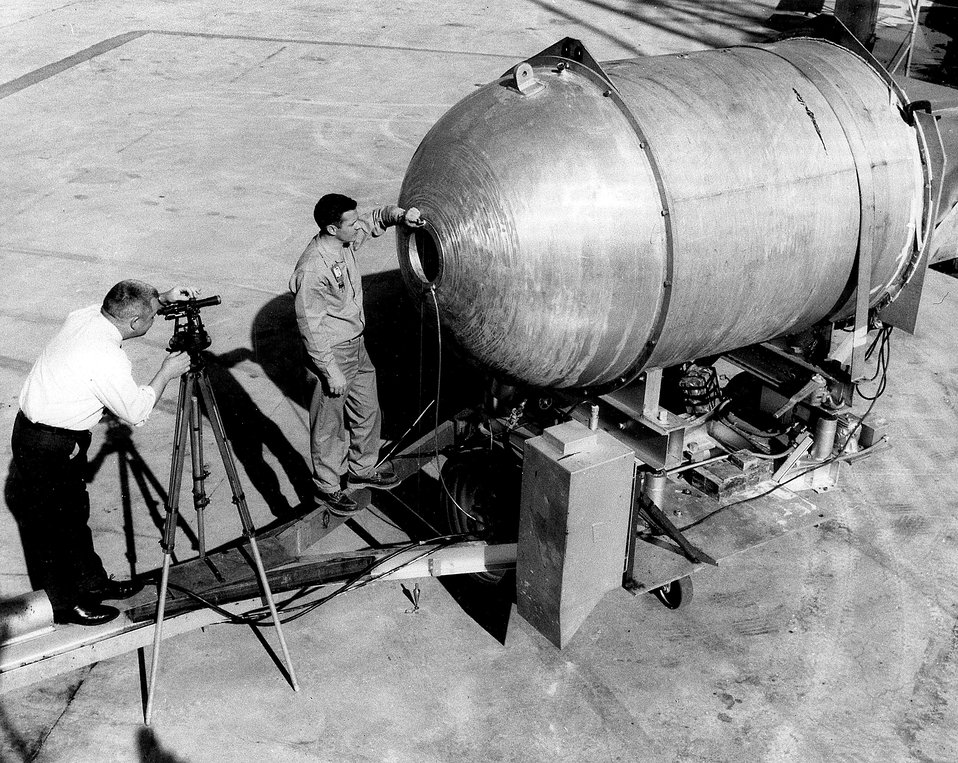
In a Tower Shielding Facility experiment designed to evaluate various sets of total neutron cross sections for oxygen and nitrogen, measurements were made of the energy spectra of fission neutrons transmitted through thick liquid samples of the elements. c. 1967